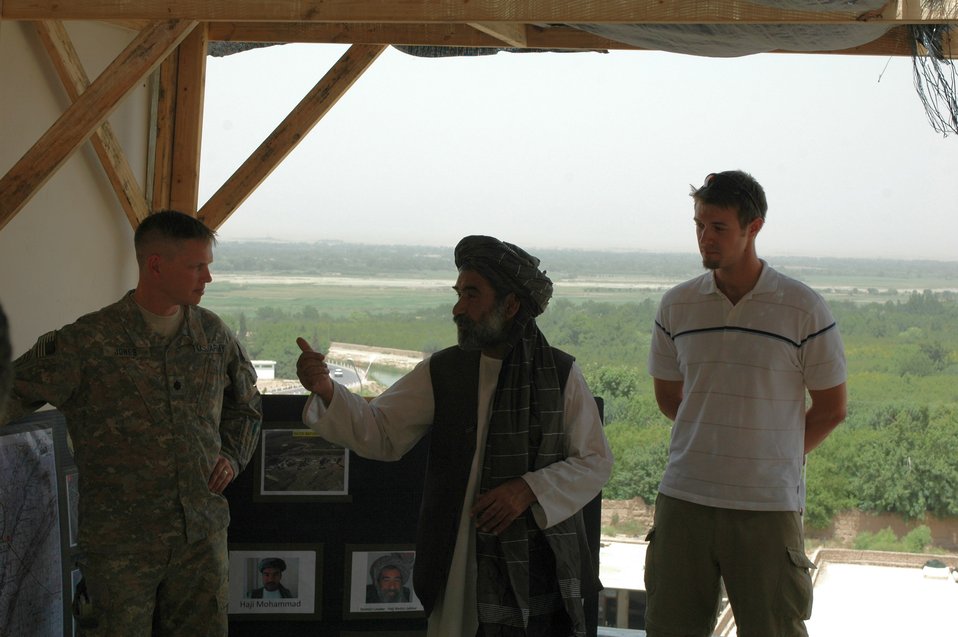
CODEL Berman